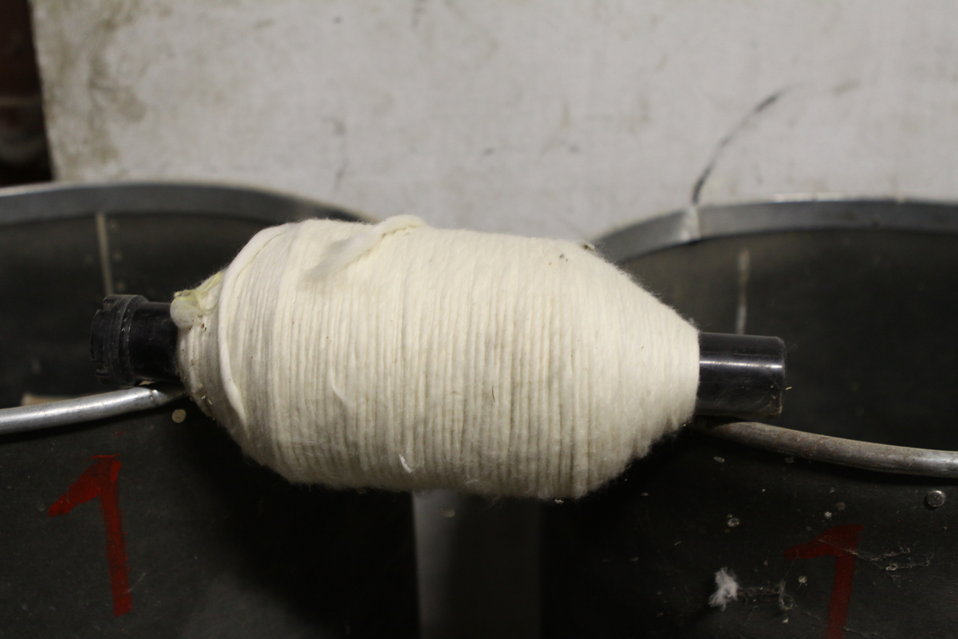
100525 Hirat Textile Company 751